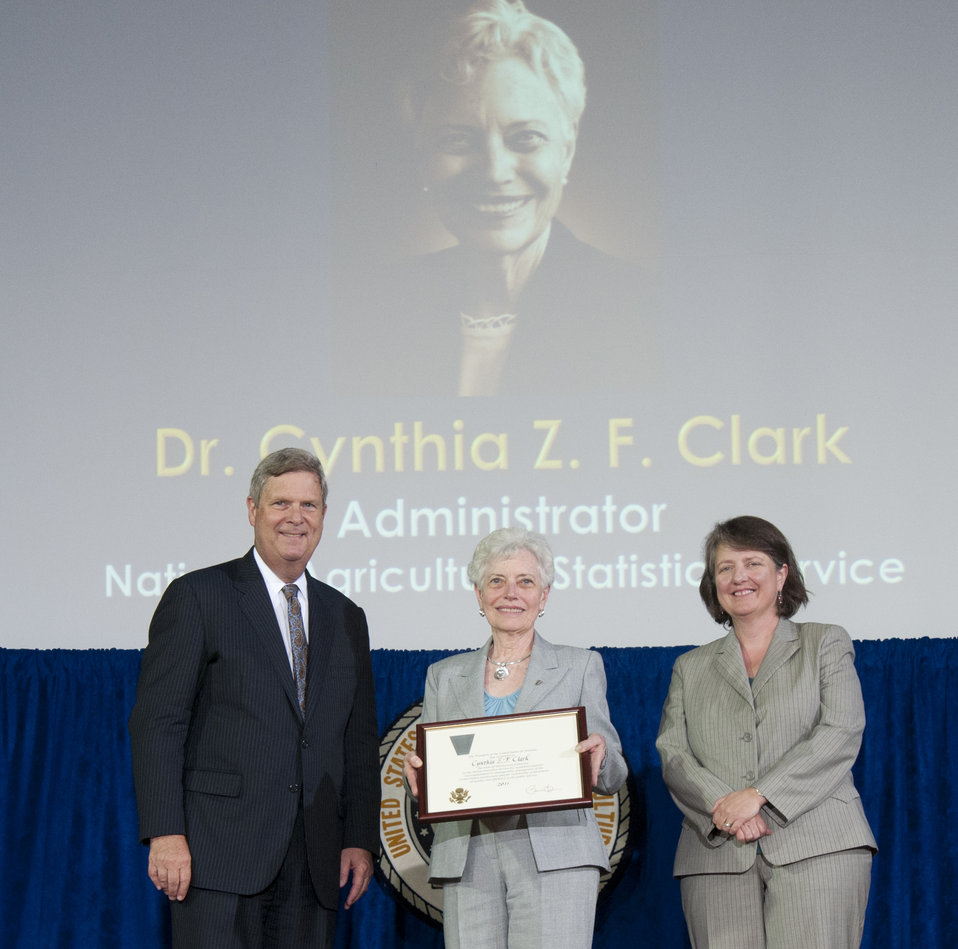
Agriculture Secretary Tom Vilsack and Agriculture Deputy Secretary Kathleen Merrigan present the Meritorious Executive Award to National Agricultural Statistics Service (NASS) Administrator Dr. Cynthia Z. E. Clark the U.S. Department of Agriculture (USDA) 64th Annual Honor Awards Ceremony in Washington, D.C. on Wednesday, Sept. 12, 2012. The Meritorious Executive award in the Senior Executive Service is for sustained superior accomplishment in management of programs of the U.S. Government and for noteworthy achievement of quality and proficiency in the public service.